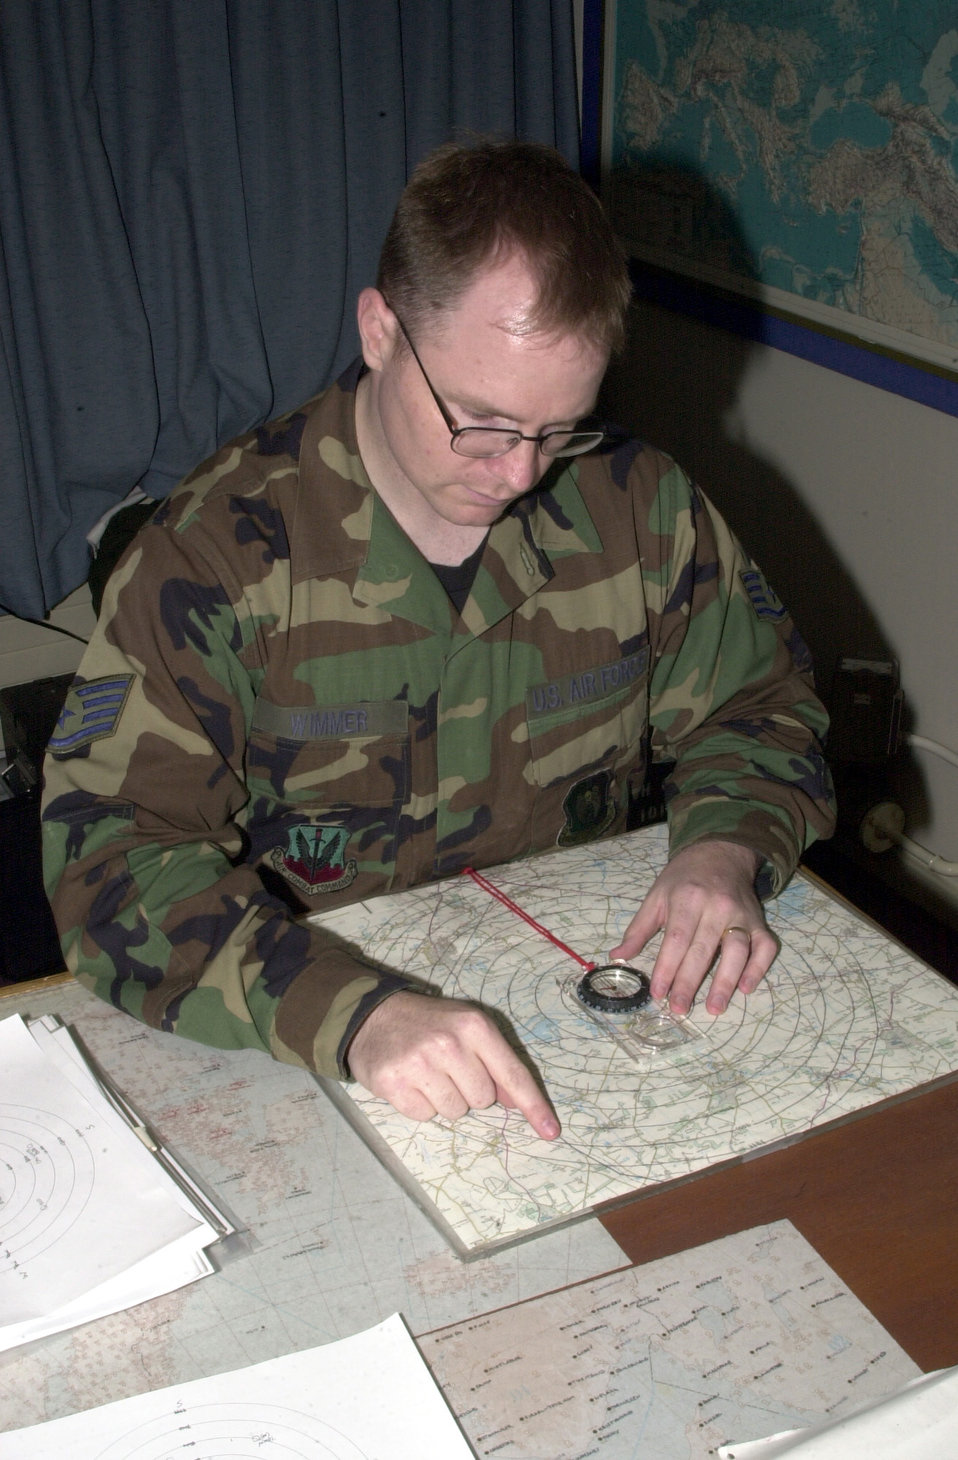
Weatherman

OPERATION IRAQI FREEDOM -- Staff Sgt. Mike Wimmer reads a visibility chart at a forward-deployed location. Wimmer is weather forecaster assigned to the 457th Air Expeditionary Wing.